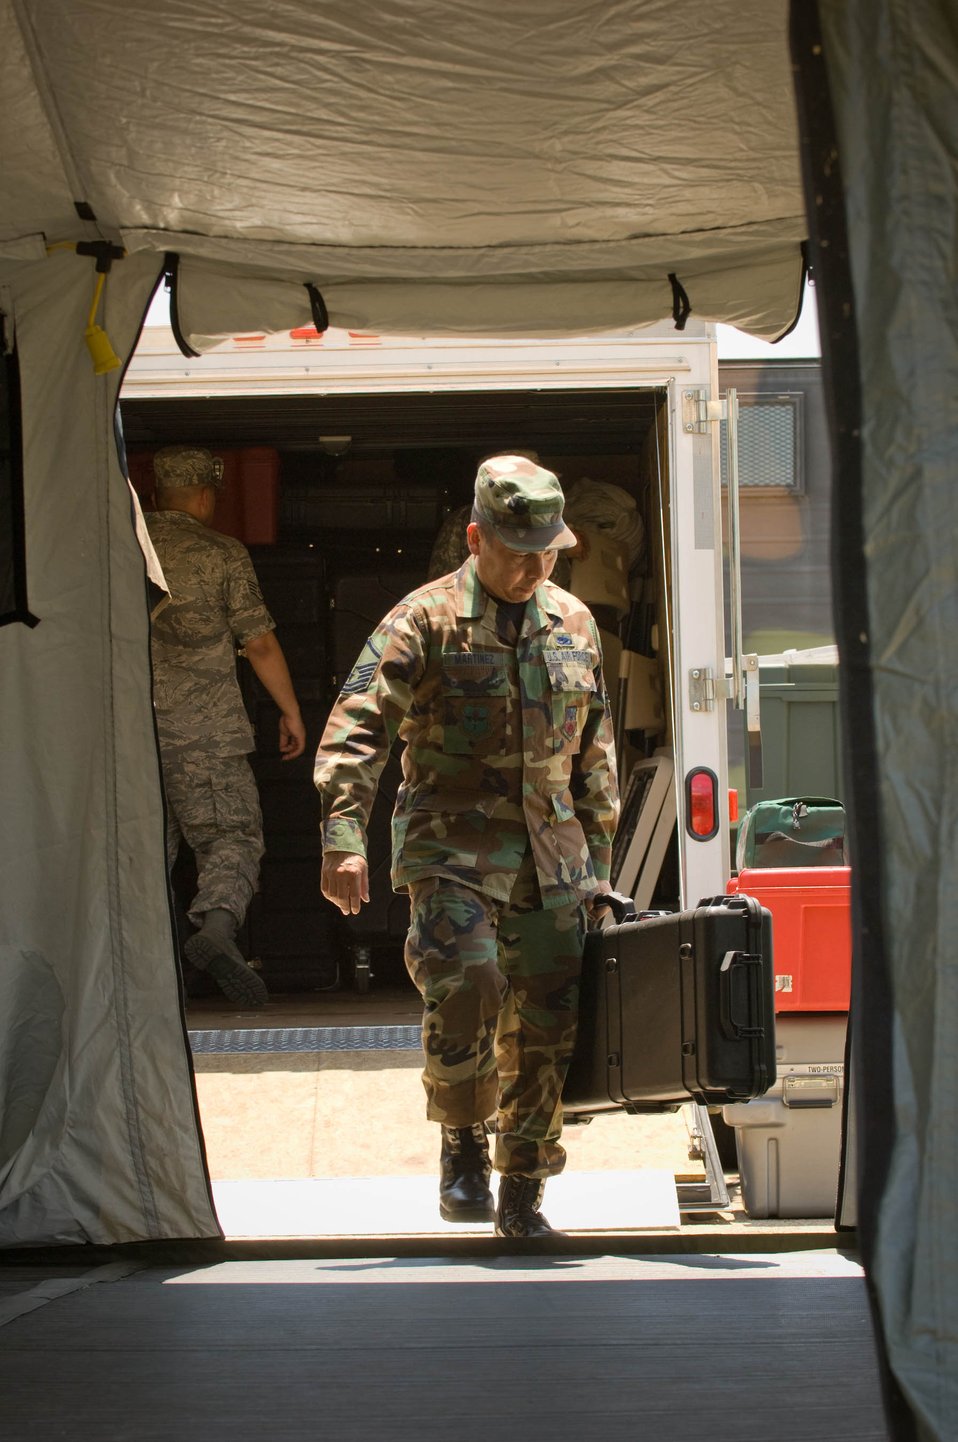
Joint Teams prepare for Hurricane Dolly

Master Sgt. Mark Martinez helps setup a base-X tent, part of the Joint Incident Communications Capability (JICC) that will provide video teleconference, satellite and cellular communications next to the Emergency Operations Center in San Antonio July 22. The Texas Army National Guard is part of the Standing Joint Interagency Task Force-Texas at Camp Mabry, Texas. Sergeant Martinez is from the Air National Guard's 149th Communications Flight at Lackland Air Force Base, Texas. Once completed the JICC will provide 2000 sq. ft. of portable or tented floor space on the lawns in front of the EOC.